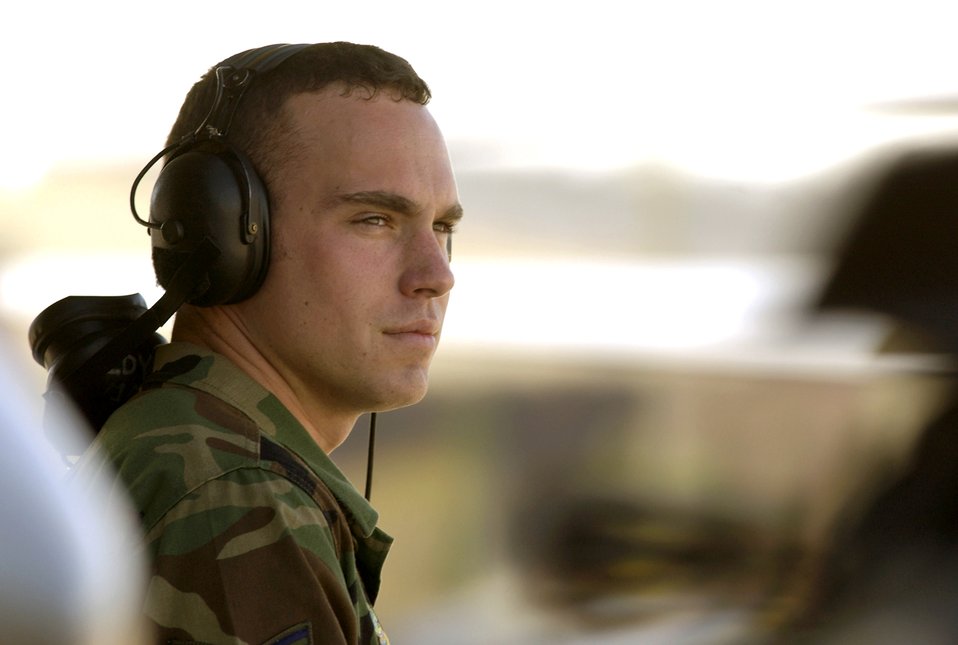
Maintainers mind William Tell details

TYNDALL AIR FORCE BASE, Fla. -- Senior Airman Nicholas Hofmann watches F-15 Eagles taxi for a competition here at William Tell 2004. This is the 50th anniversary of the William Tell competition, which tests an aircrew's ability to perform under combat conditions. Airman Hofmann is from the 493rd Fighter Squadron at Royal Air Force Lakenheath, England.